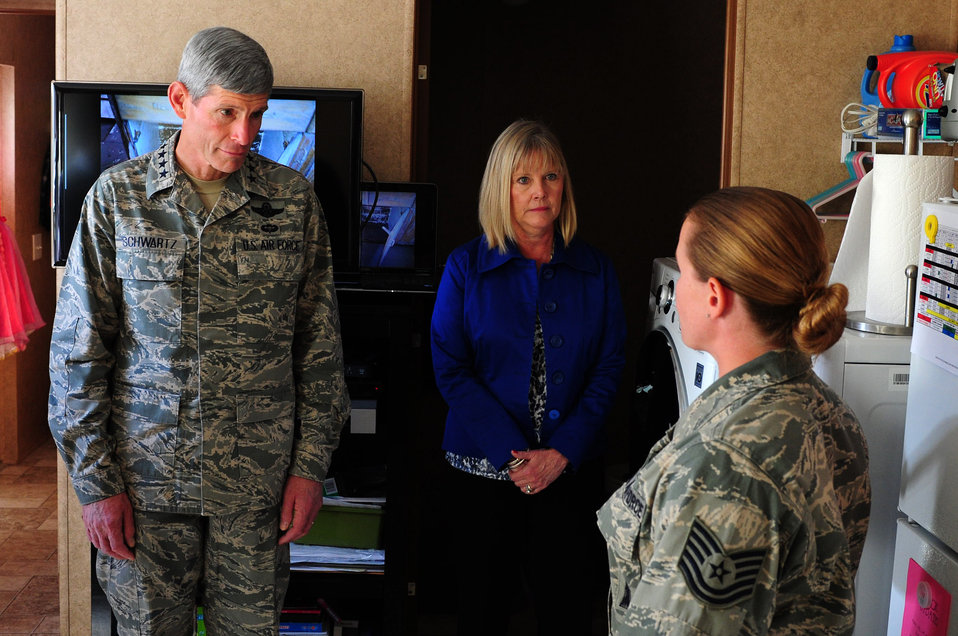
CSAF visits Minot AFB

Air Force Chief of Staff Gen. Norton Schwartz and his wife Suzie speak with Tech. Sgt. Natasha Horn Oct. 4, 2011, in the Horn's Federal Emergency Management Agency trailer in Minot, N.D. Schwartz visited the Horn family to see the flood areas in Minot and how Airmen are recovering. Horn is the 91st Missile Wing executive assistant to the command chief at Minot Air Force Base, N.D.,